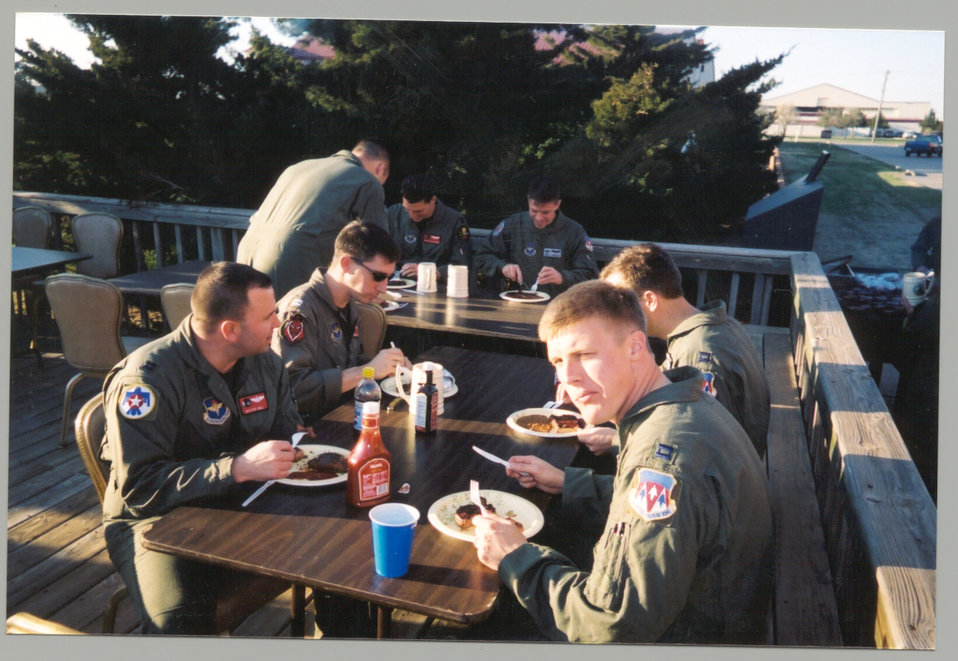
Drug bust

MOODY AIR FORCE BASE, Ga. -- Search teams uncovered more than 16,000 Ecstasy pills and $50,000 in cash belonging to Senior Airman Fredenburg stationed here. Agents also seized three motor vehicles and a motorcycle, and they uncovered evidence that indicated he had tens of thousands of dollars in numerous investment accounts.